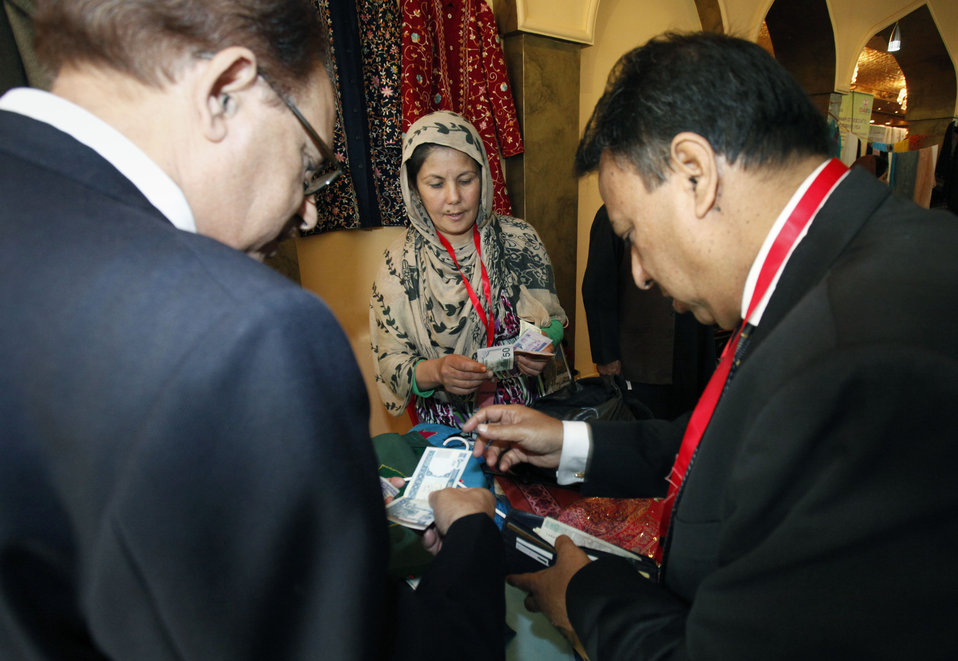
Access to Finance Exhibition in Kabul

Vendors sell their goods at the Second Access to Finance Exhibition in Kabul on Tuesday, October 29, 2013. Thousands of business representatives from across Afghanistan attended the exhibition promoting branchless banking and electronic payments.